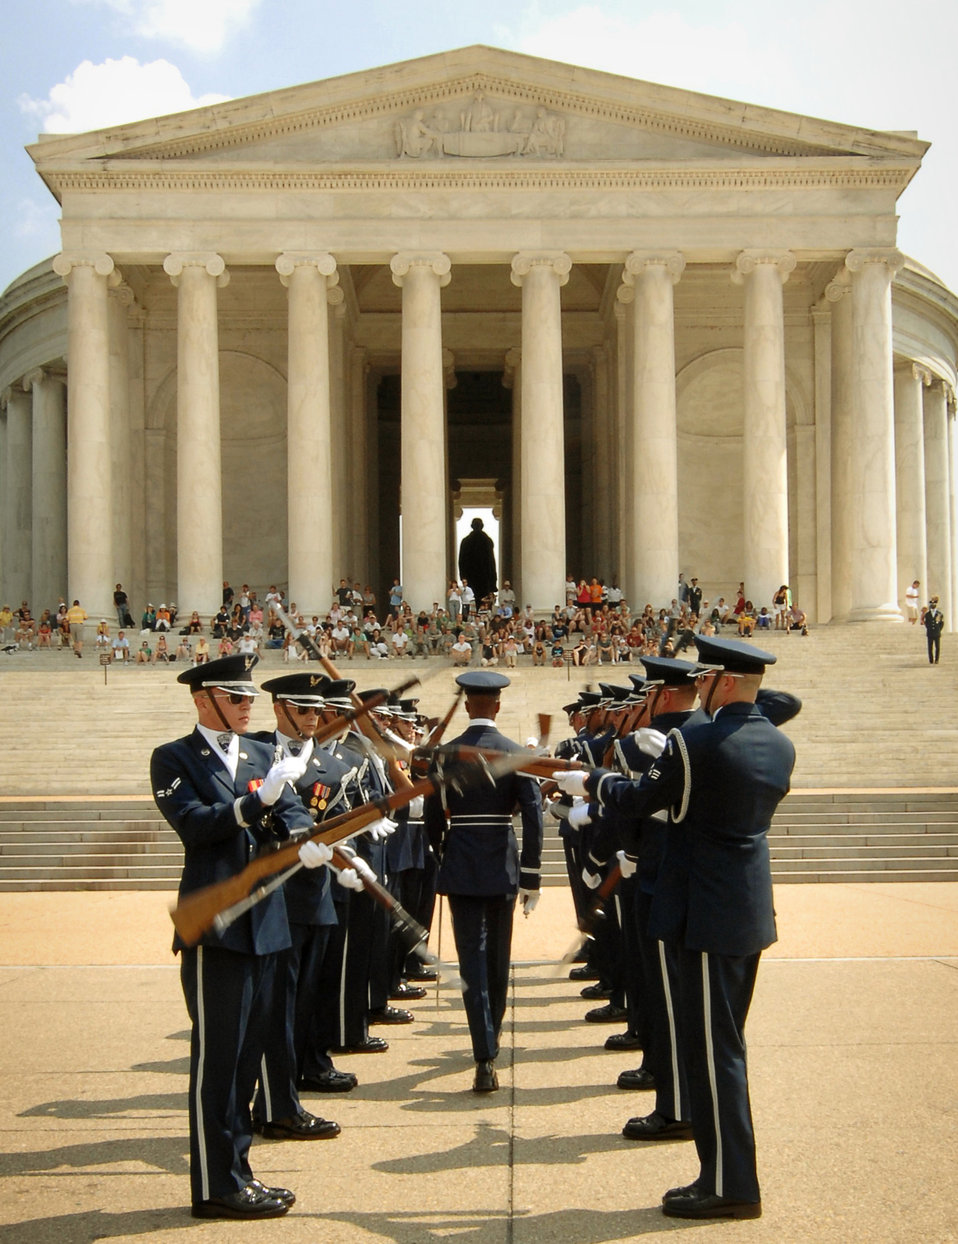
Summer Drill

The U.S. Honor Guard Drill Team performs at the Jefferson Memorial in Washington D.C. July 8 during its Summer Drill Series. The team will perform around the National Capitol Region until July 29.